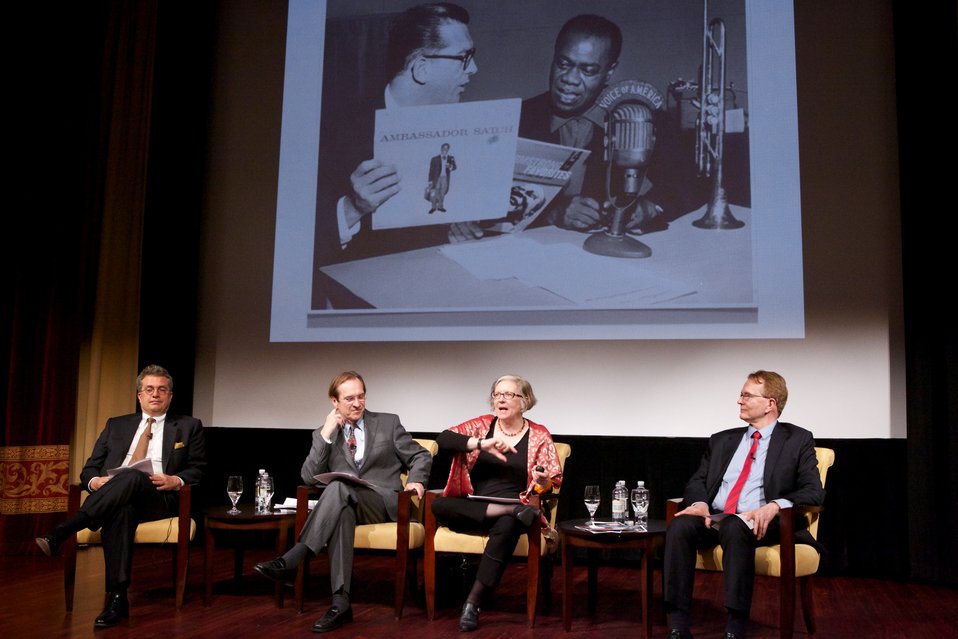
Jazz Diplomacy: Sending America's Music to the World